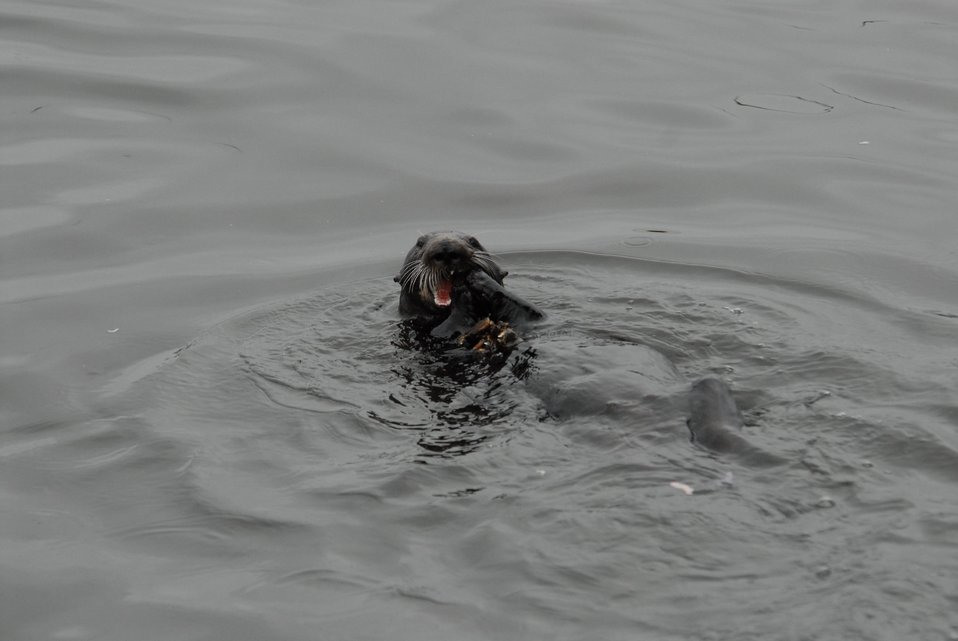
Sea otter lying on back eating mussels